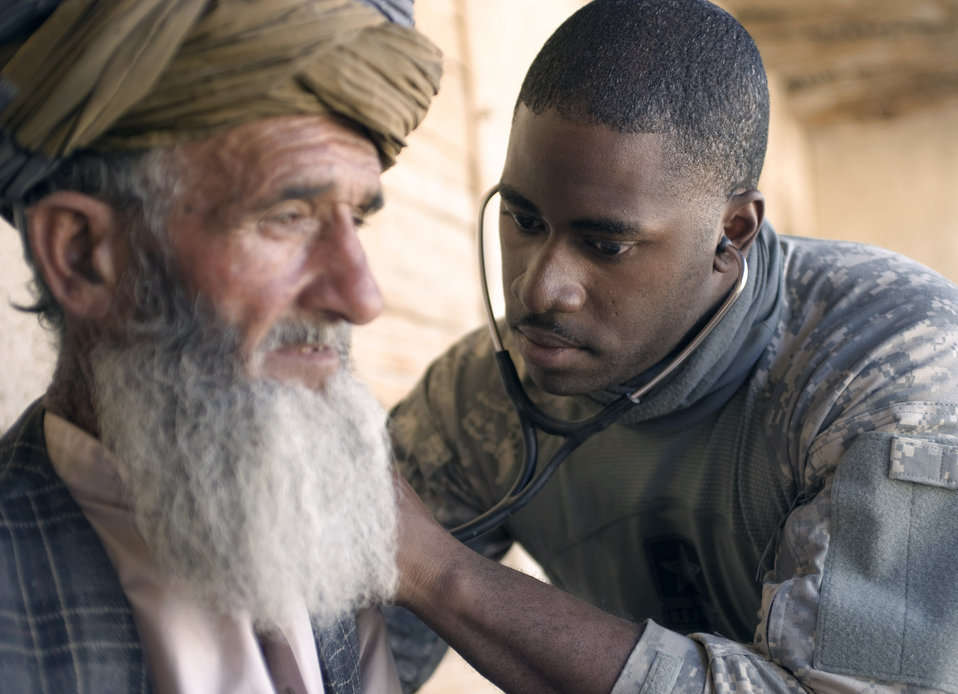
PRT strives to build relationships in remote village

Senior Airman Courtney Thompson examines an Afhgan man at a village medical outreach clinic in the small, mountainous village of Pacha Hawk, Afghanistan. The event, two months in the making, brought a 40-person, joint-service team to the remote, mountain-top village. Airman Thompson is Kapisa and Parwan Provincial Reconstruction Team medic.